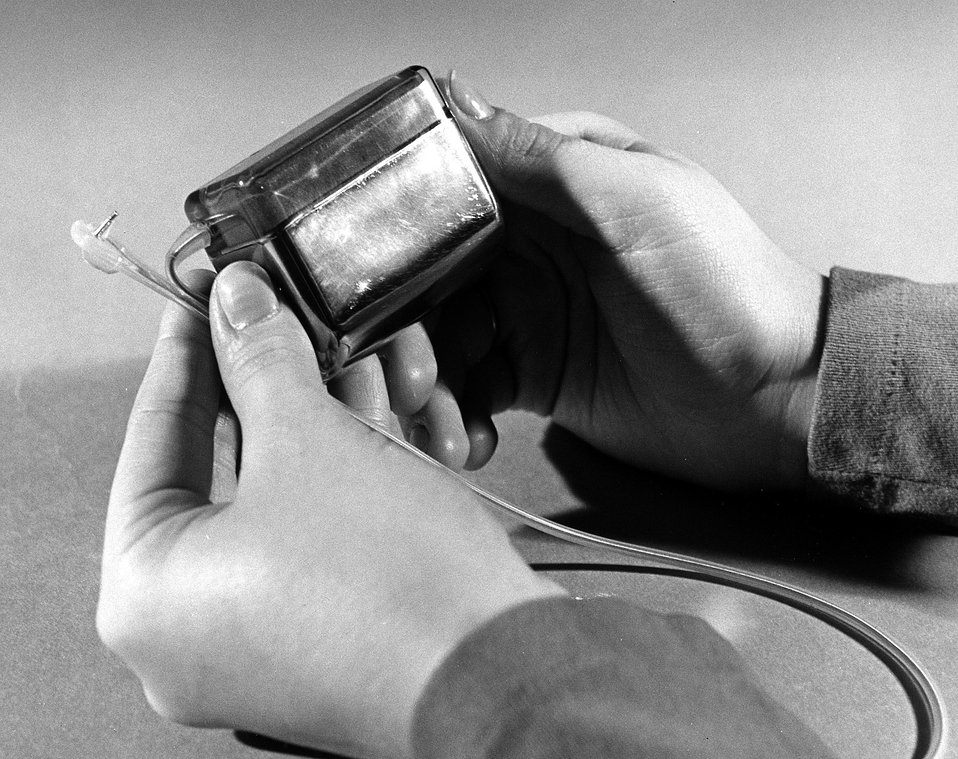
A display model of a nuclear-powered heart pacemaker developed by the U.S. Atomic Energy Commission. Circa 1973.